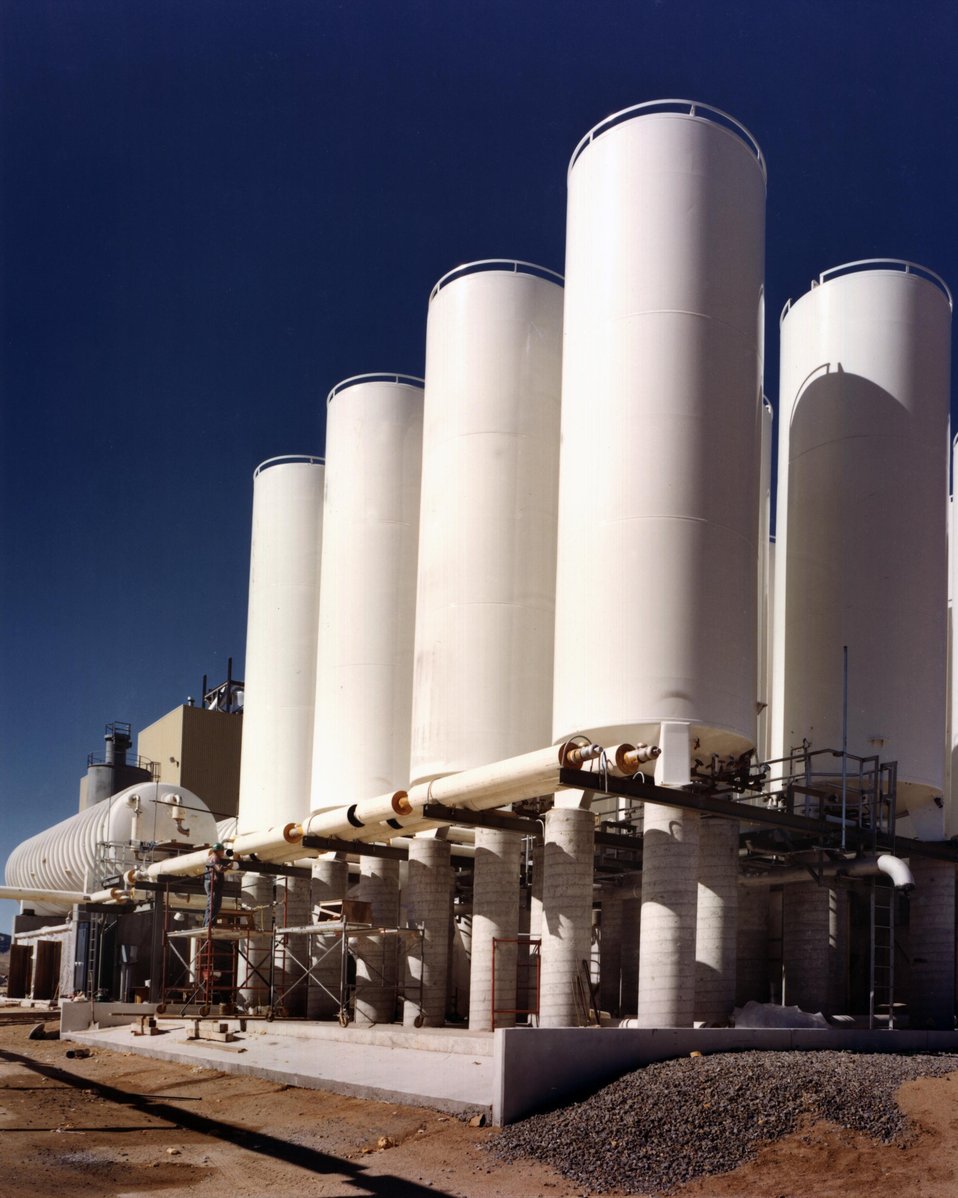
VIEW OF OXYGEN AND NITROGEN STORAGE SYSTEMS.

OXYGEN IS NEEDED TO COMBUST PLASMA MATERIALS FOR BOTH TEST TRAINS. NITROGEN IS USED AT VARIOUS SITE LOCATIONS AS AN INERTING GAS FOR COAL TRANSPORT SYSTEMS. A SECONDARY NITROGEN USE IS FOR EQUIPMENT PURGING.